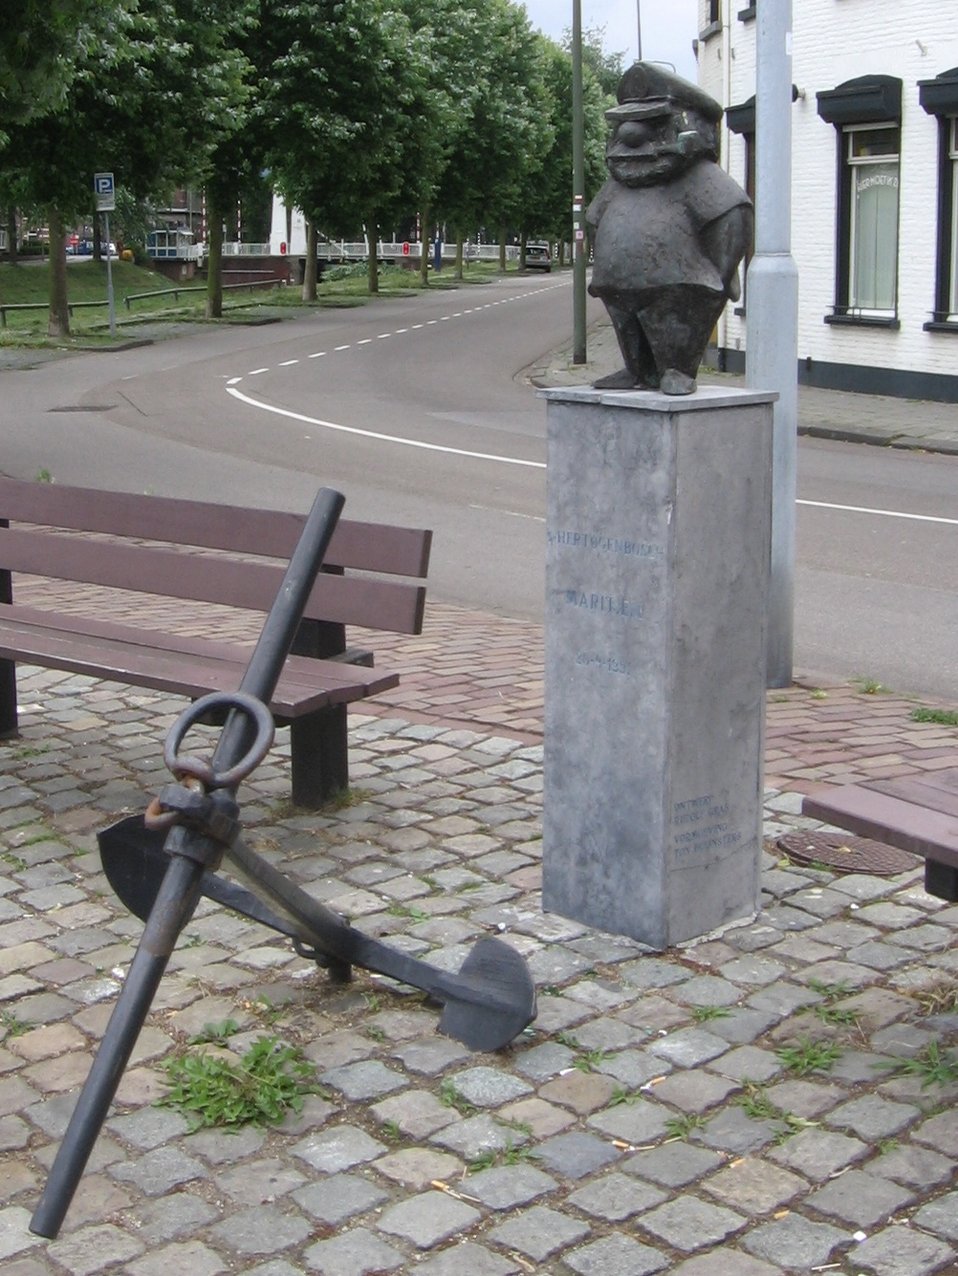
the sailor in 's-Hertogenbosch, the Netherlands